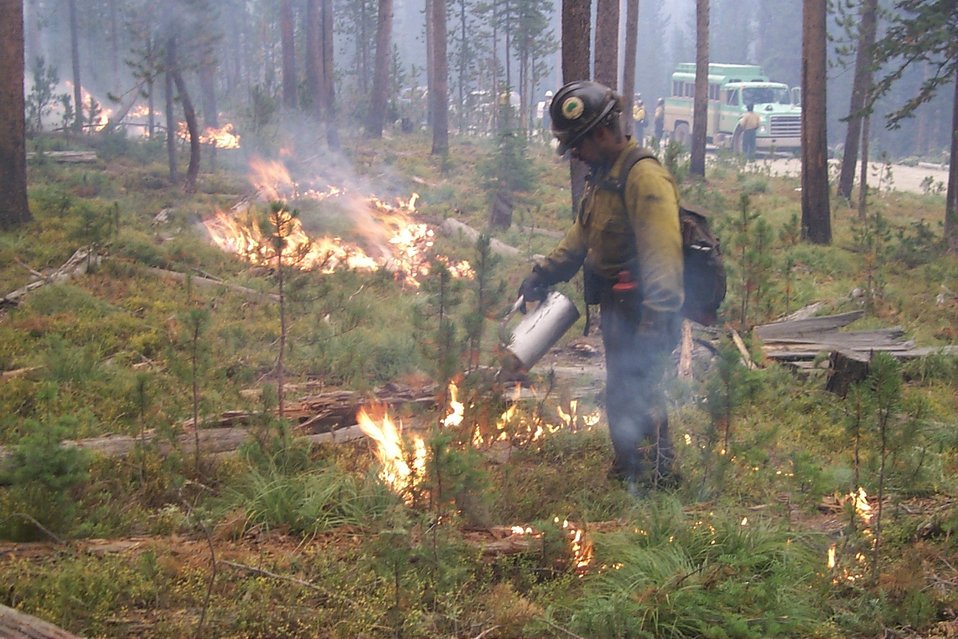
Controlled burn Fire Clearwater Fire Salmon Field Office USRD Upper Snake River District